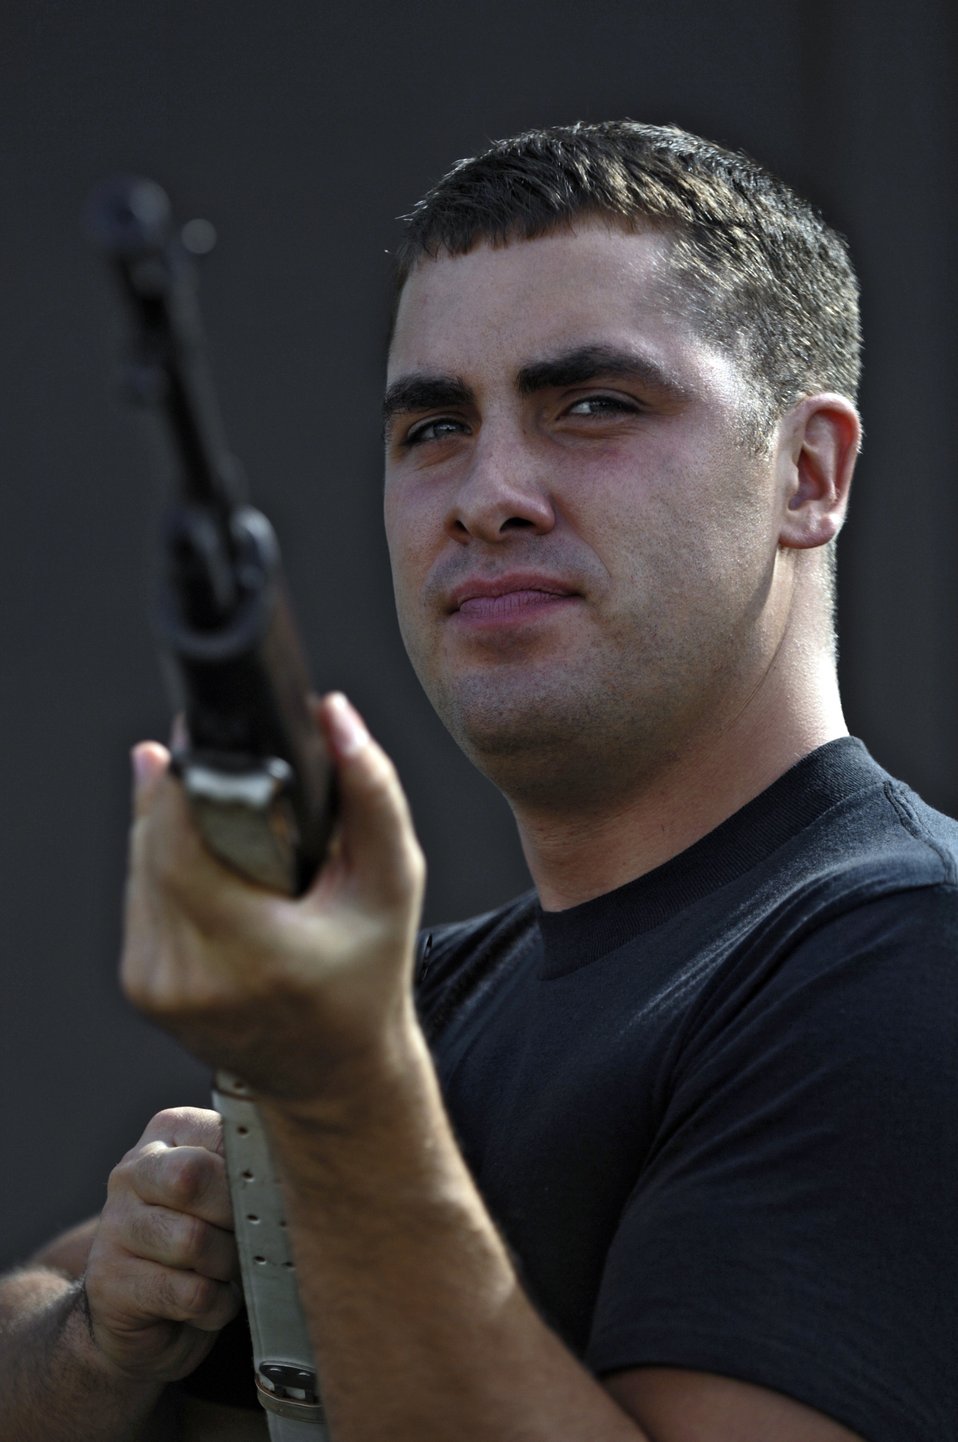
Honoring customs

Senior Airman Adam Wade practices firing positions at Hickam Air Force Base, Hawaii Oct. 25. The 15th Airlift Wing Honor Guard emphasizes the importance of military customs and courtesies, dress and appearance, and drill and ceremony.